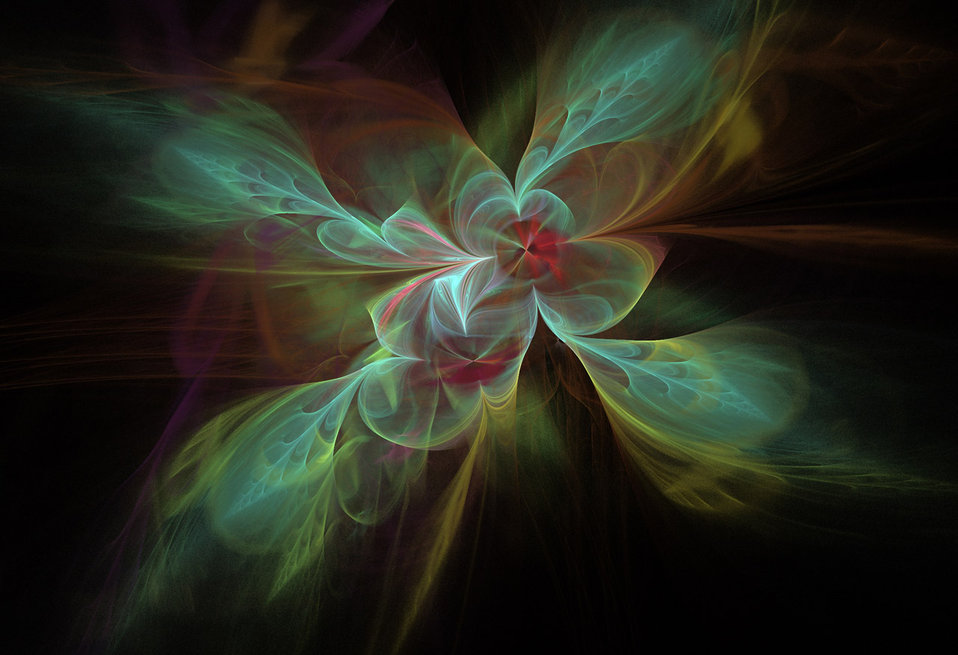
Red centred fractal

Fractal image using a script.